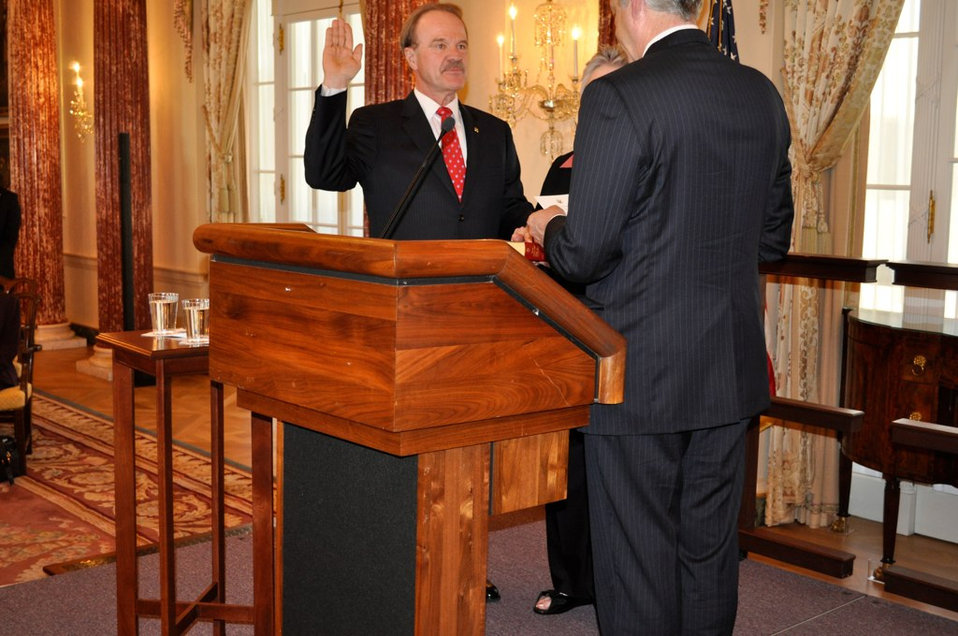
Deputy Secretary Burns Swears In Ambassador Mozena

Deputy Secretary of State William Burns swears in Dan Mozena as the U.S. Ambassador to Bangladesh at the U.S. Department of State in Washington, D.C., on November 7, 2011.